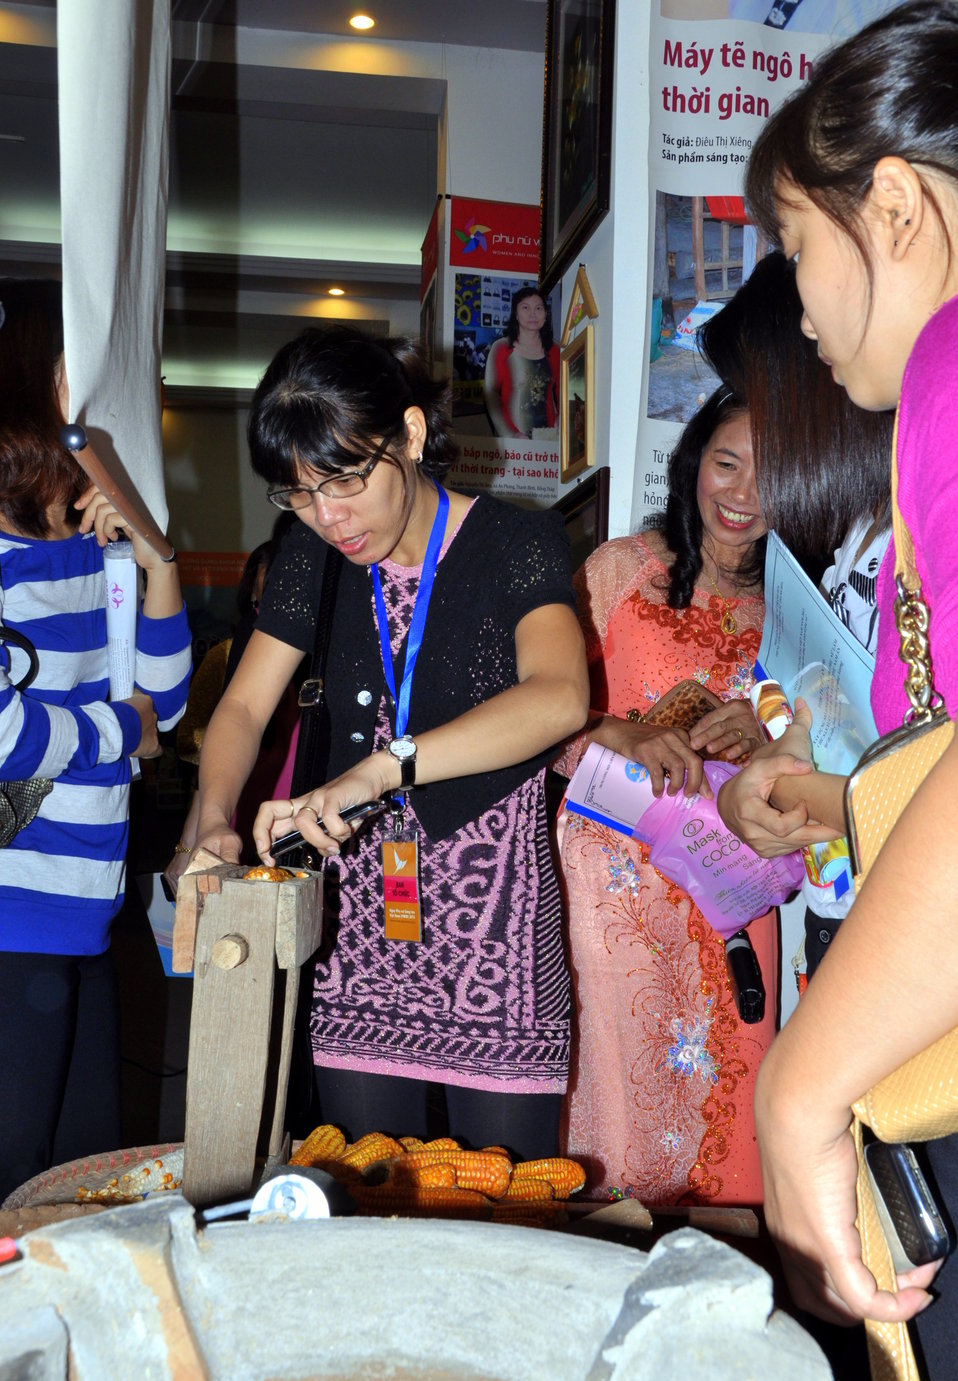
Vietnam Women Innovation Day 2013

Hanoi, October 1, 2013.